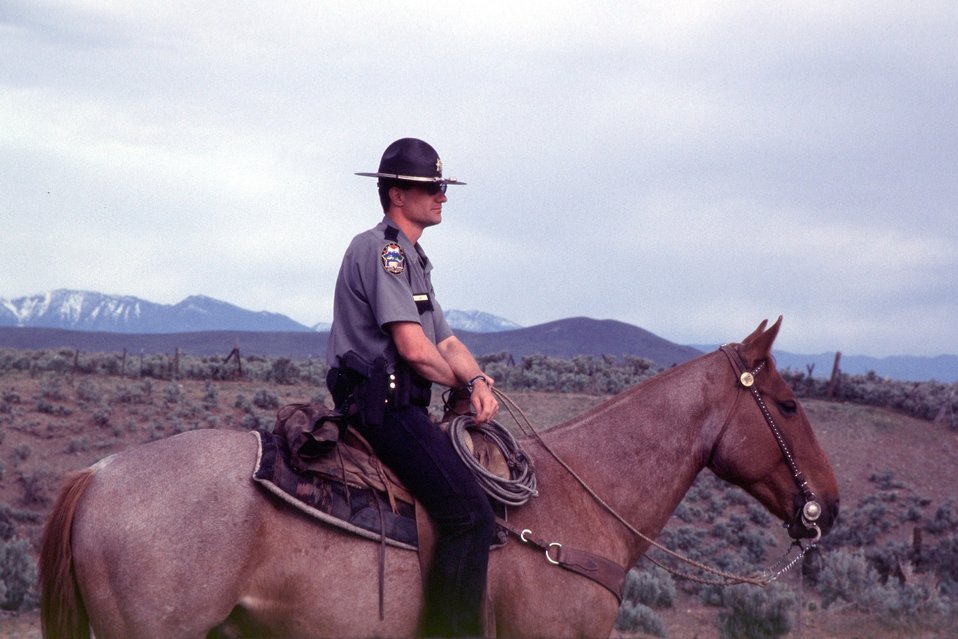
NHOTIC 10th Anniversary. State Trooper on horseback.